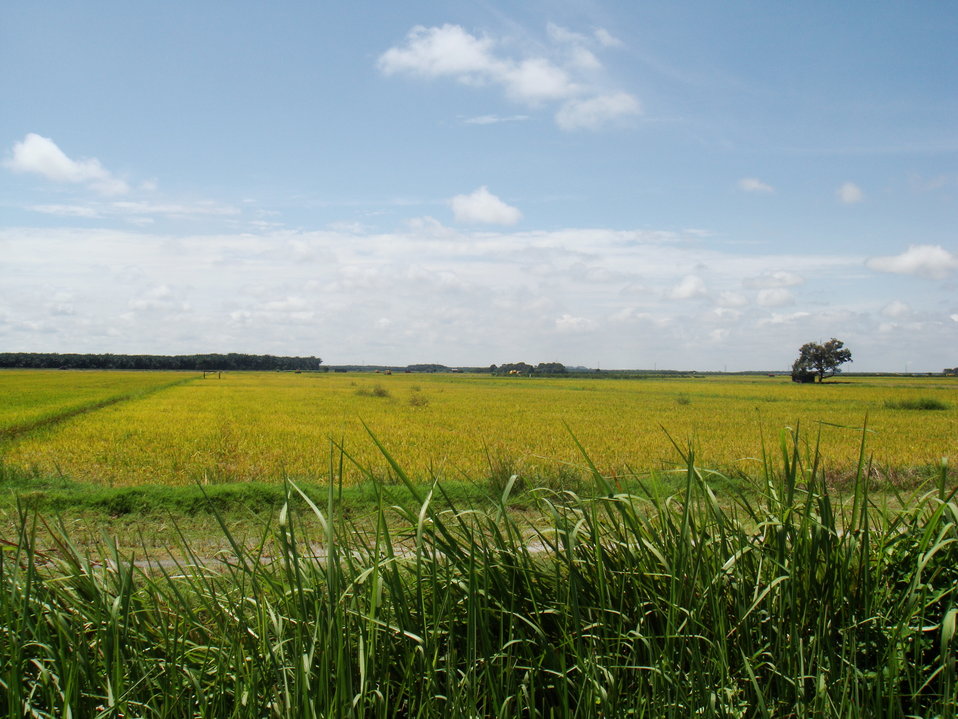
Bahasa Melayu: Sawah padi yang kekuningan di Perak, Malaysia.